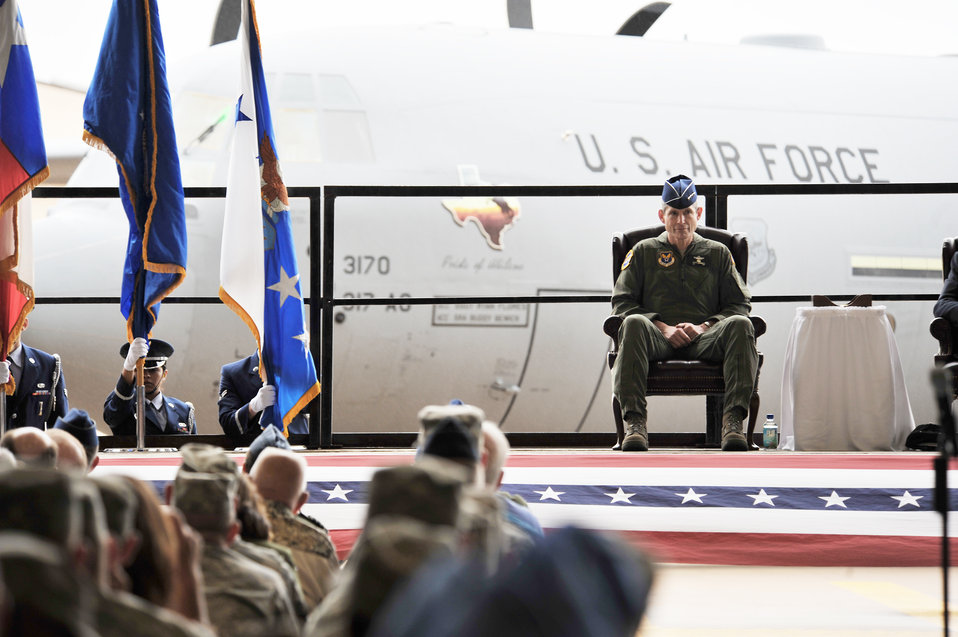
Super Herc

Air Force Chief of Staff Gen. Norton Schwartz waits to be introduced during a brief press conference at Dyess Air Force Base, Texas, April 16, 2010, following his delivery of a new C-130J Super Hercules to the base. This was the first of 28 C-130Js to be delivered to the 317th Airlift Group there.